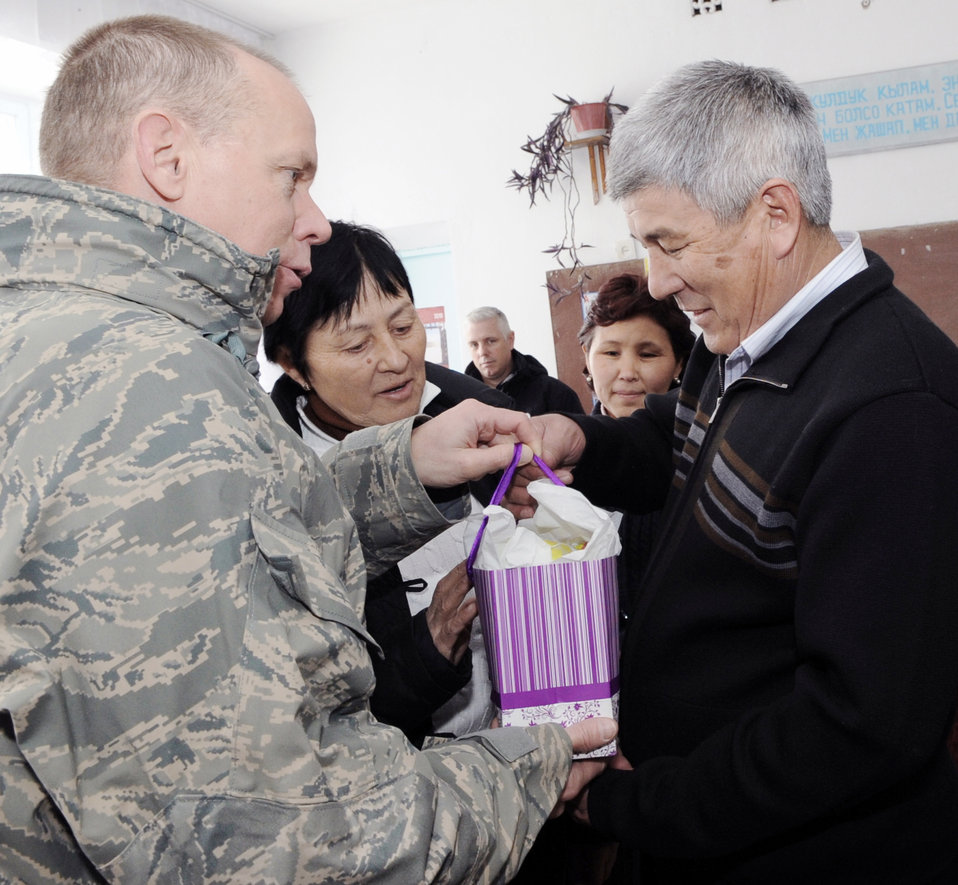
Generals visit Kyrgyz school

Gen. Donald J. Hoffman presents Syrgak Kyolykeer with a gift from the Transit Center at Manas, Kyrgyzstan Feb. 9, 2010, at the Grozd School in Grozd Village, Kyrgyzstan. General Hoffman is the commander of the Air Force Materiel Command and Mr. Kyolykeer is the mayor and head for the Grozd Village administration.